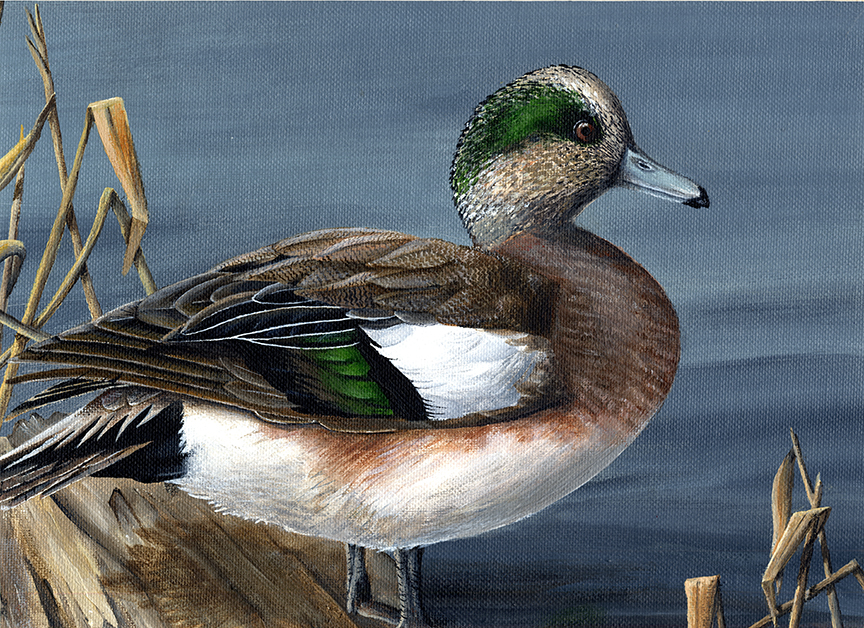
JRDuck2013OH

2013 Junior Duck Stamp Best of Show-Ohio